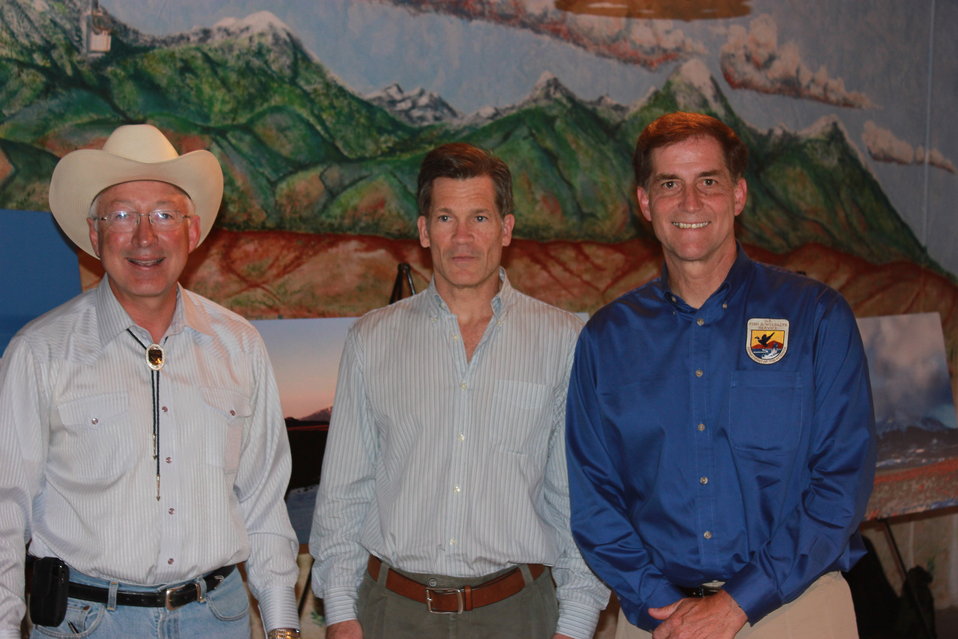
Historic Conservation Easement in Sangre de Cristo Mountains